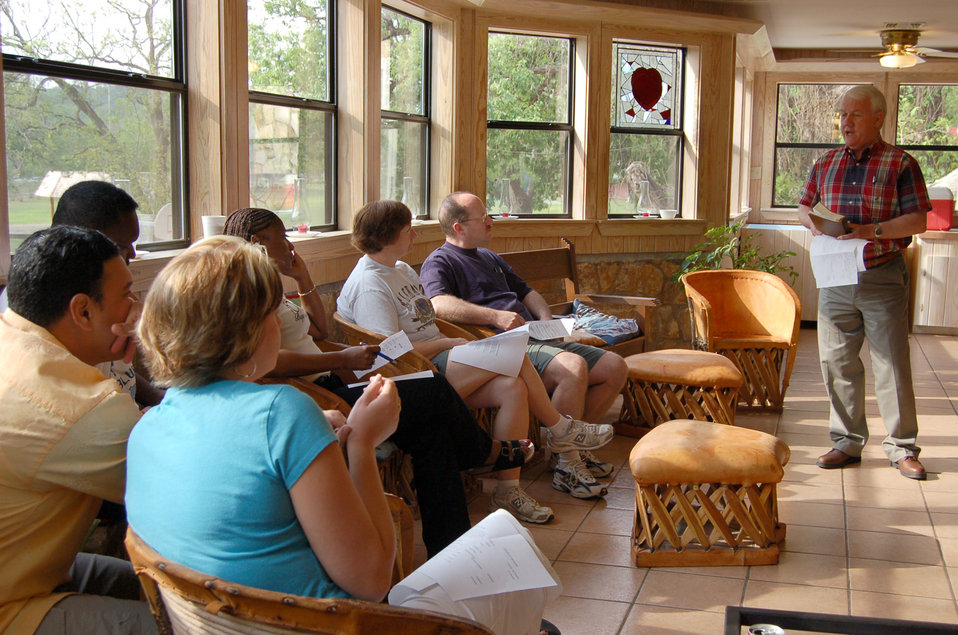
Retreat reconnects couples

Retired Army Chaplain (Col.) Jay Breland leads a nondenominational service for military couples attending a retreat at the Heart of the Hills Camp in Hunt, Texas, on Sunday, April 23, 2006. Military couples attended the week-long retreat which was hosted by the Military, Veteran and Family Assistance Foundation. The retreat helps couples reconnect after the military spouse returns from a deployment.